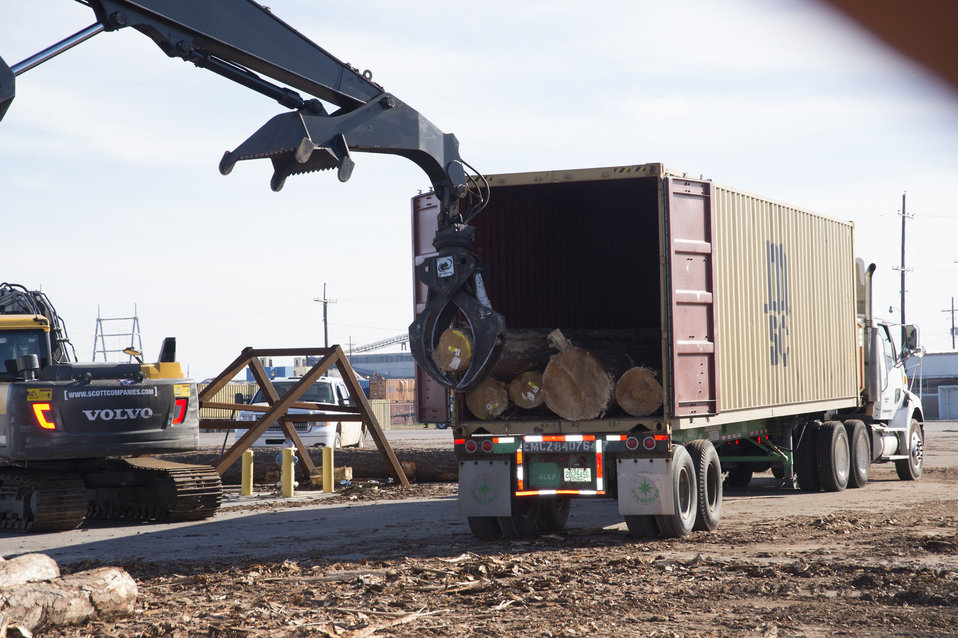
After being fumigated, logs are loaded onto trucks for transfer to the Port of New Orleans in New Orleans, LA for export on Wednesday, Nov. 20, 2013.